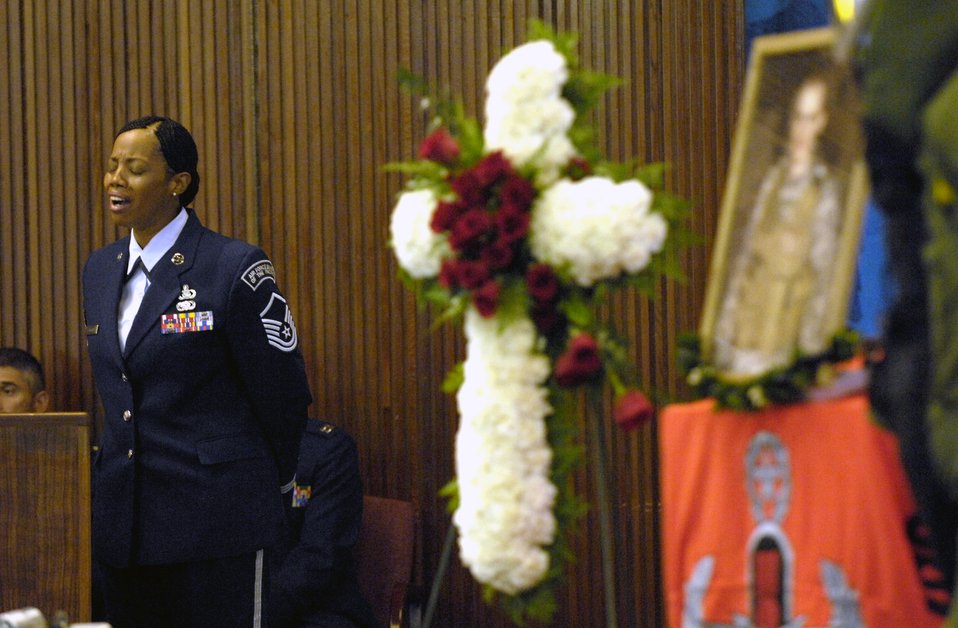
Solemn service

Master Sgt. Debra Jamison sings